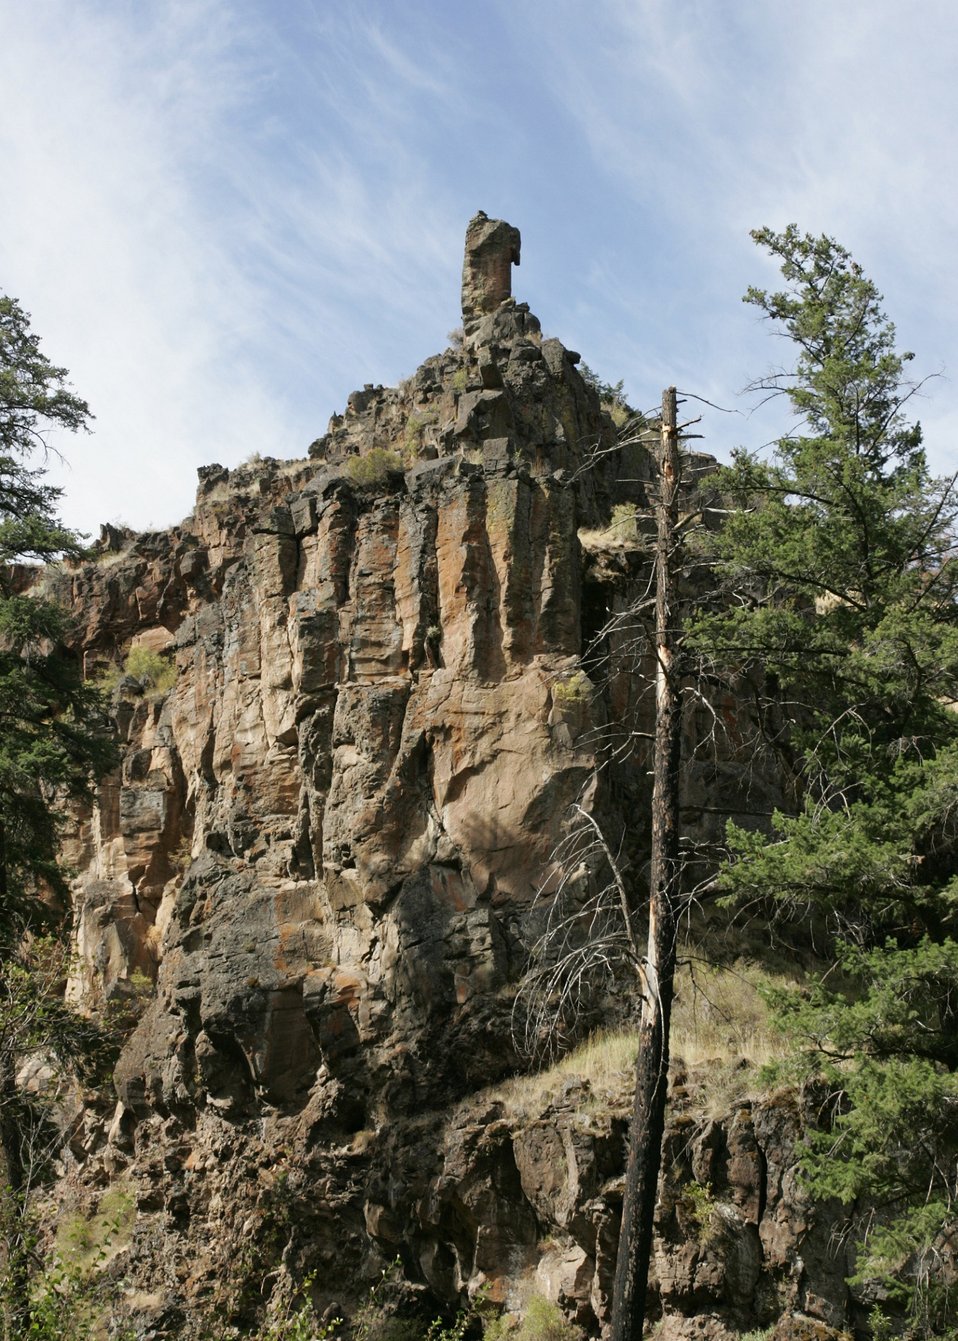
South Fork John Day River Backcountry Byway.